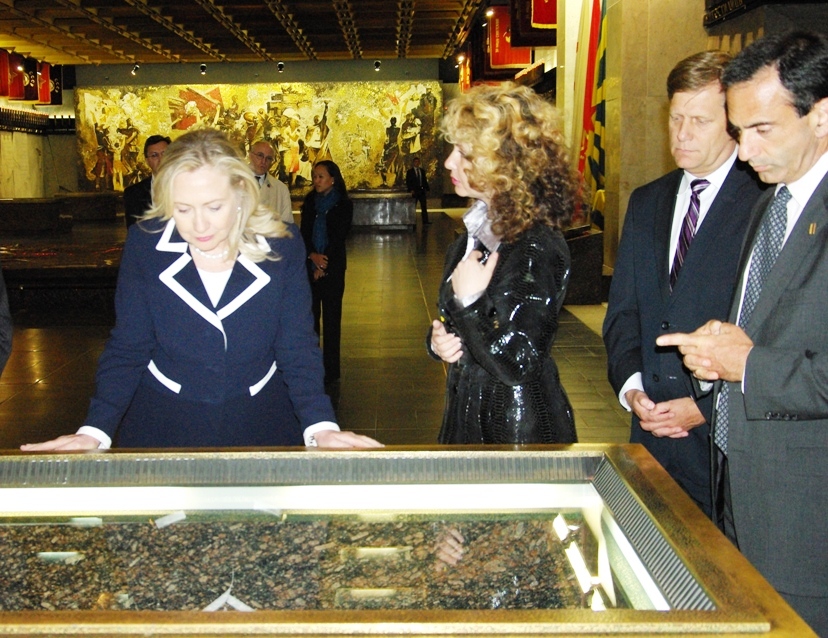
Secretary Clinton Tours the Catherine Palace

Chairman of the Federation Council of the Russian Federation Valentina Matviyenko provides U.S. Secretary of State Hillary Rodham Clinton a tour of the Catherine Palace in St. Petersburg, Russia, on June 28, 2012.